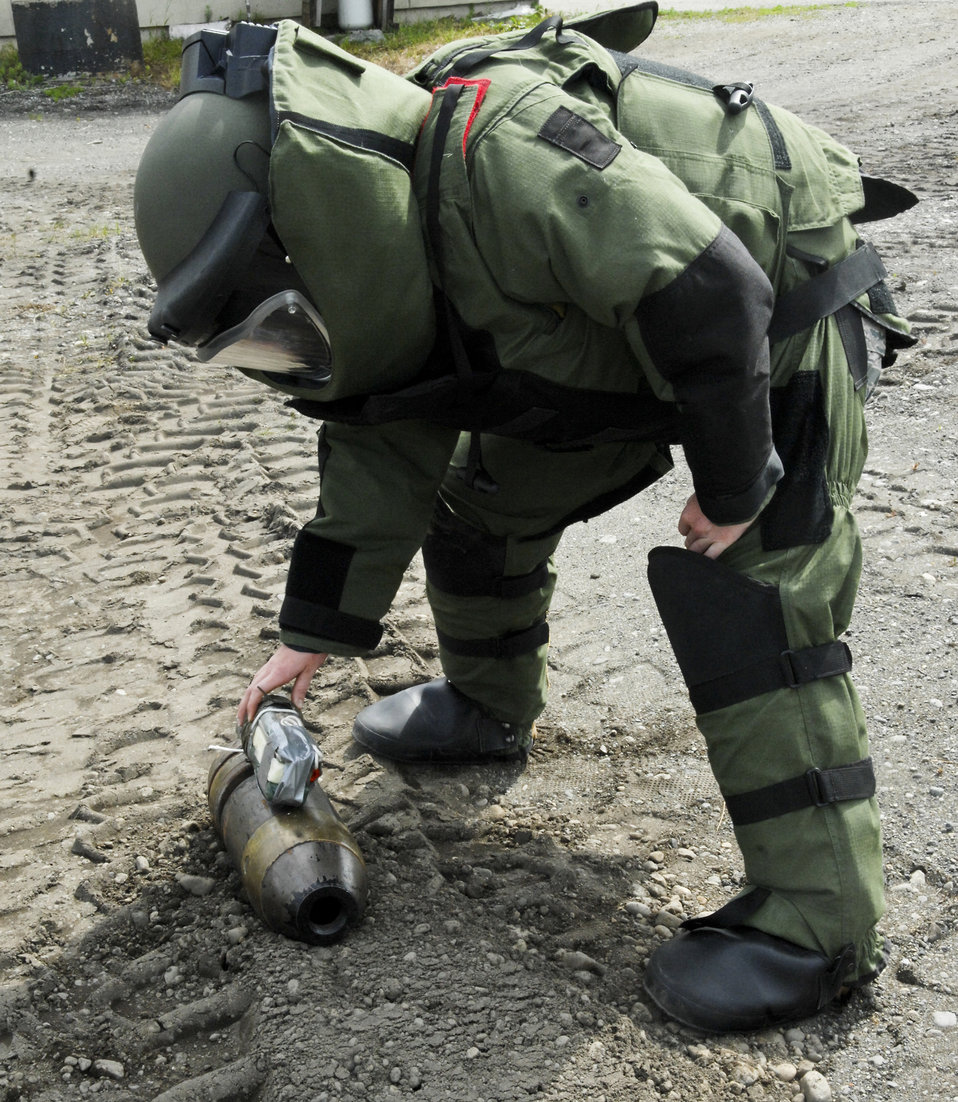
Slow, with steady hands

Airman 1st Class Monica Benzien works on a 75-pound